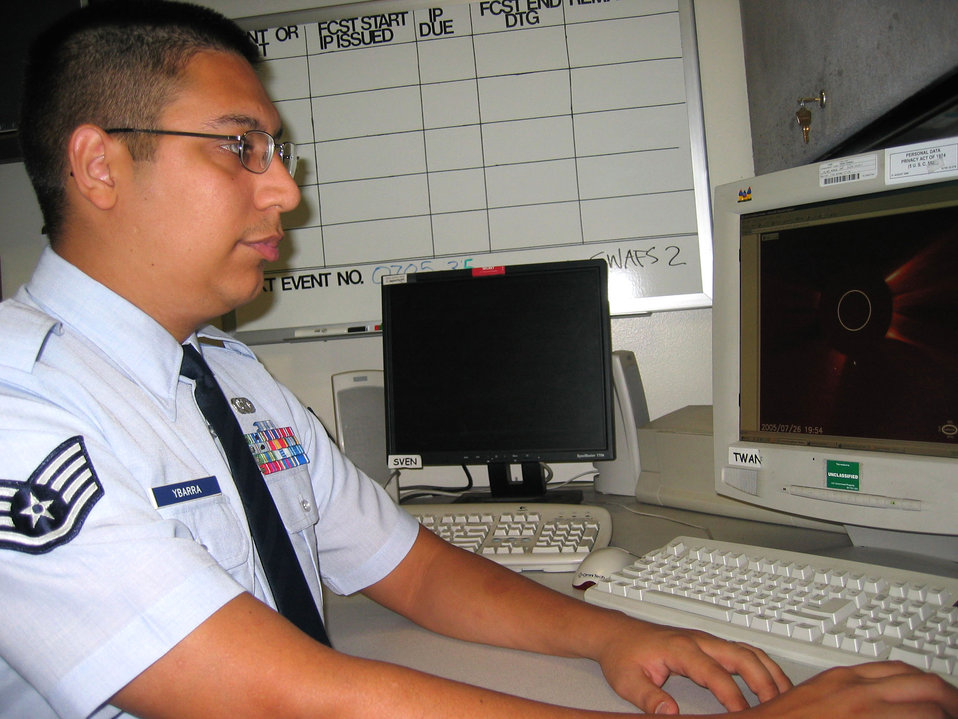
Space weather forecasts clear communications

OFFUT AIR FORCE BASE, Neb. -- Staff Sgt. Guillermo Ybarra III, uses a solar observation program to monitor solar flare activity. Space weather Airmen closely observe a variety of space weather effects such as solar winds, geomagnetic storms and solar flares ensuring that satellite communications are not disrupted. He is assigned to the Air Force Weather Agency.